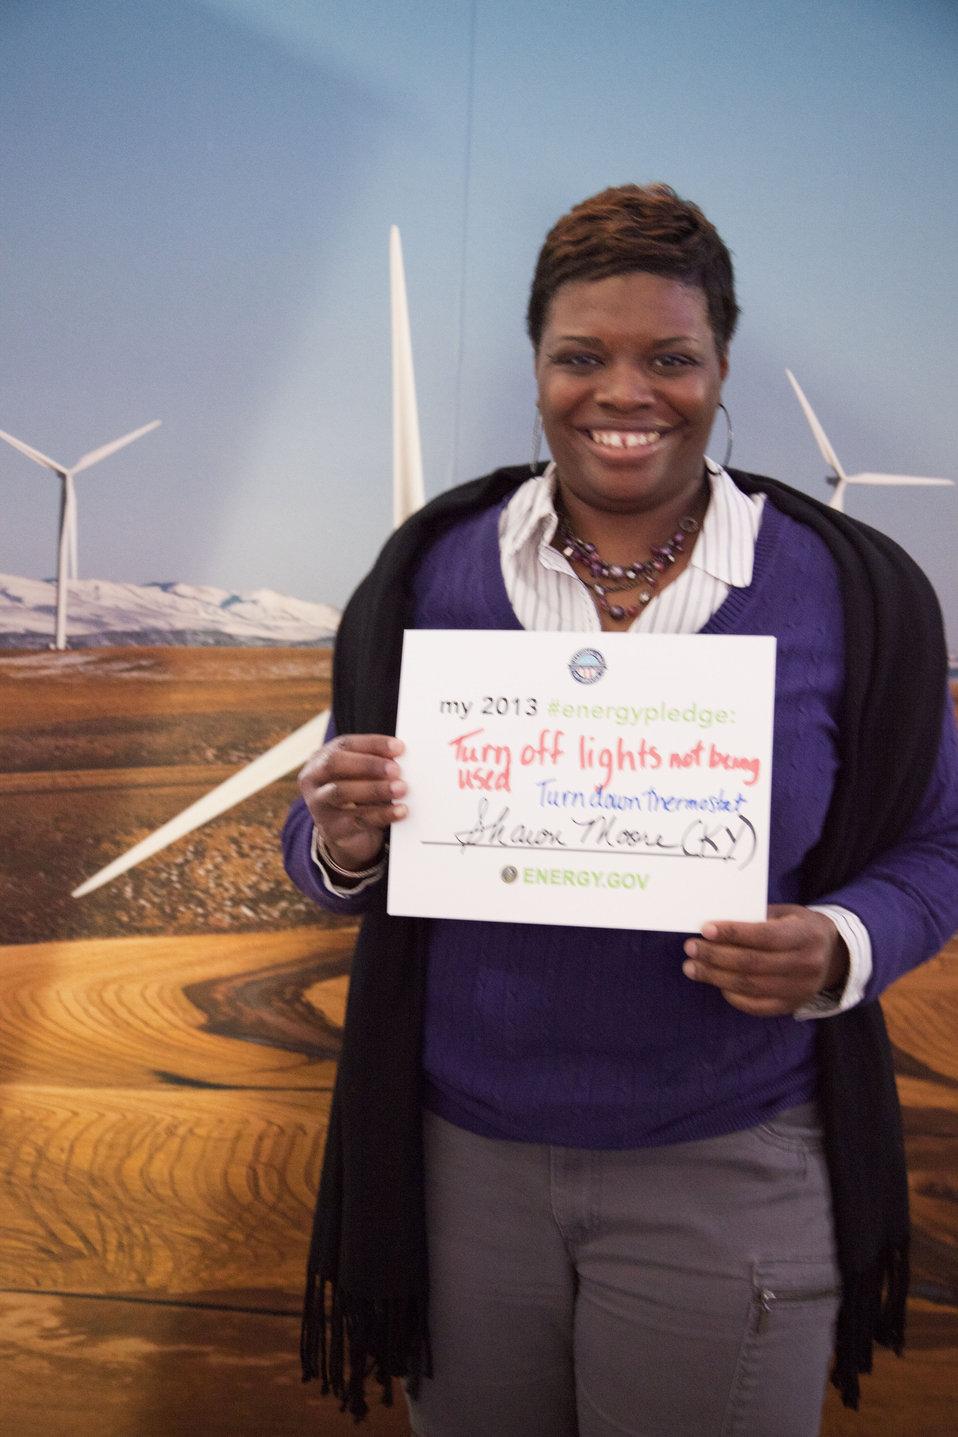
What's your #energypledge?